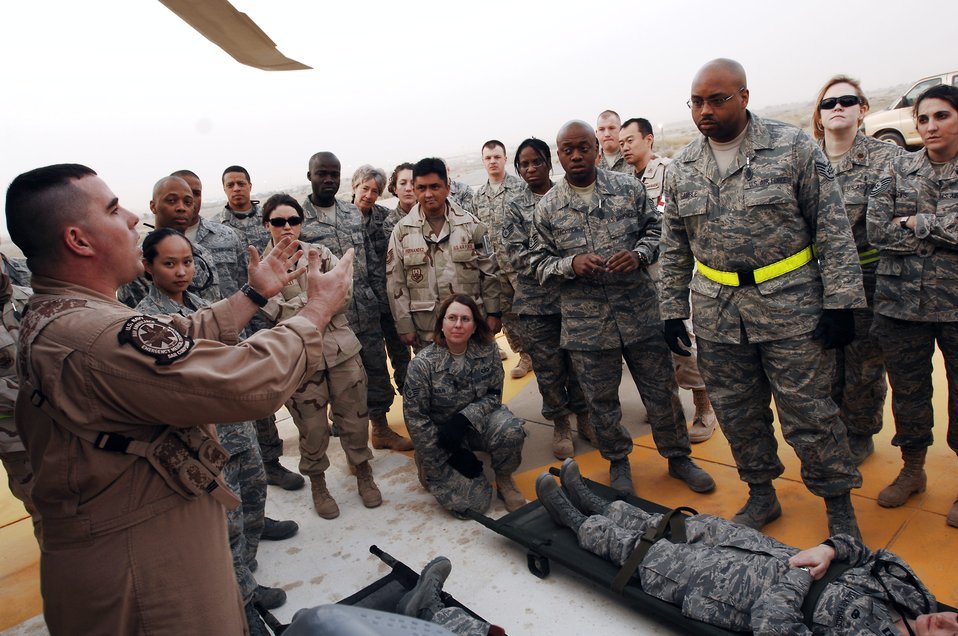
Litter training key to patient handling

Airmen from the 386th Expeditionary Medical Group listen while Navy Petty Officer 2nd Class Clayton Deese speaks about the litter management system on a Navy MH-60 Sierra Feb. 18 at a Southwest Asia air base. The training familiarized medics on the loading and extracting techniques of patients for medical evacuation missions in support of operations Enduring Freedom and Iraqi Freedom.